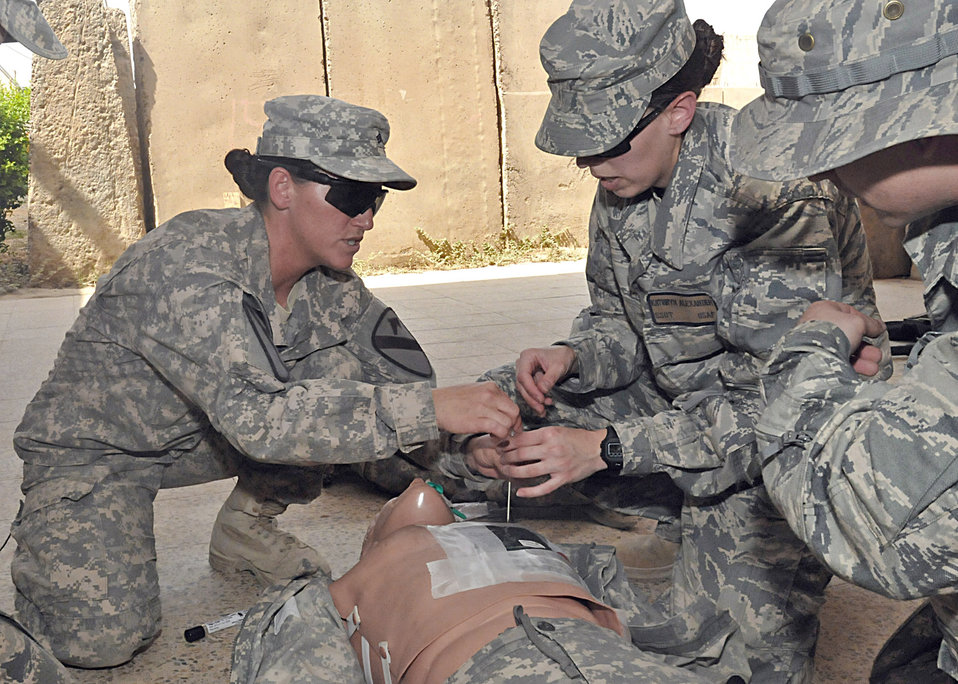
It works like this

Using a medical mannequin, an Army combat medic teaches an Airman to perform a chest needle decompression to treat a chest wound injury July 7, 2011, during a tactical field care exercise at Contingency Operating Site Marez, Iraq.